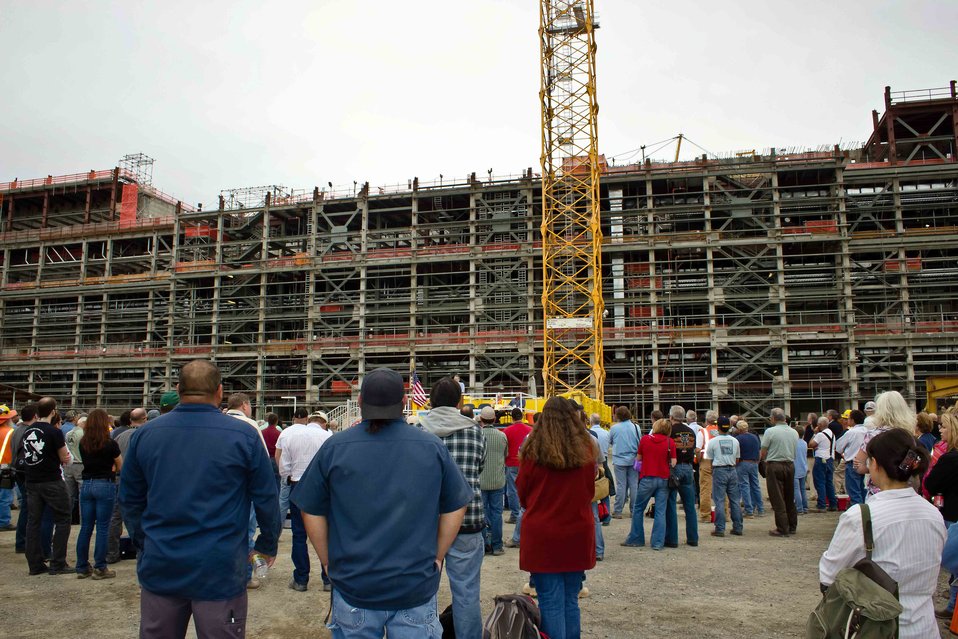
Secretary Chu Visits Hanford

DOE Secretary Chu meets with hundreds of Waste Treatment Plant workers during his July 15, 2012 visit to the Hanford Site.